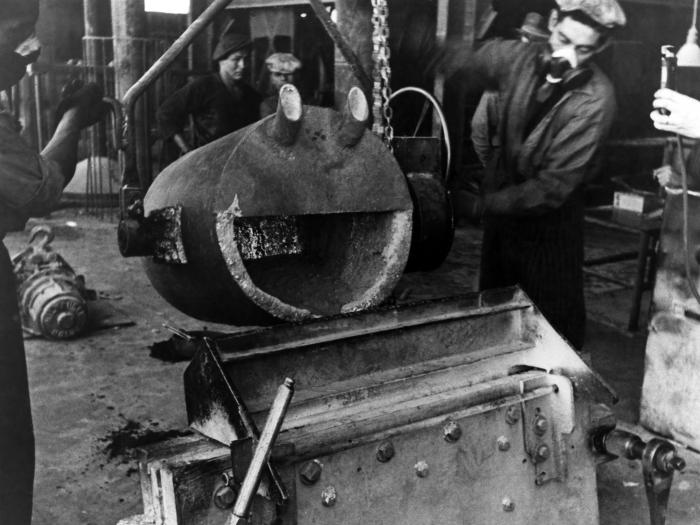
This historical photograph was provided by the Center for Disease Control's (CDC), National Institute for Occupational Safety and Health (NIOSH). The image, from 'Public Health Bulletin' Issue, 301, depicted workers who were pouring lead into a copper smelter. The workers involved were wearing respirators, while the hand of an industrial hygienist could be seen at right, sampling the air around the operation, in order to determine in-factory pollution levels. Workers can be exposed to lead through inhalation of fumes and dusts, as well as through ingestion, as a result of lead-contaminated hands and clothing.